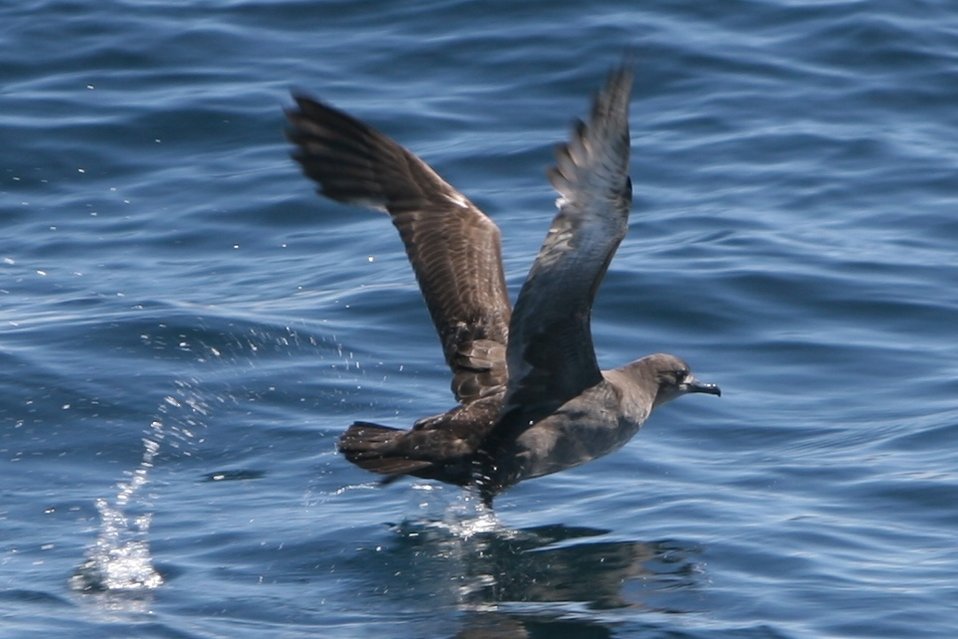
Sooty Shearwater (Puffinus griseus)